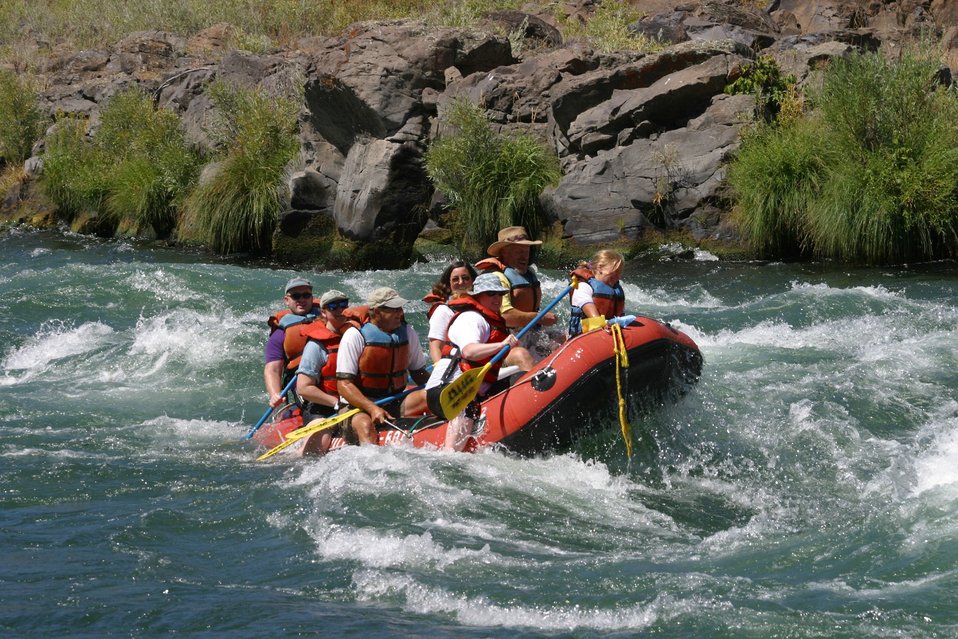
Wapinitia Rapids class III, has large roller coaster waves. 7/26/03 Pelton Dam 3600 cfs: Moody Rapids 4300 cfs.